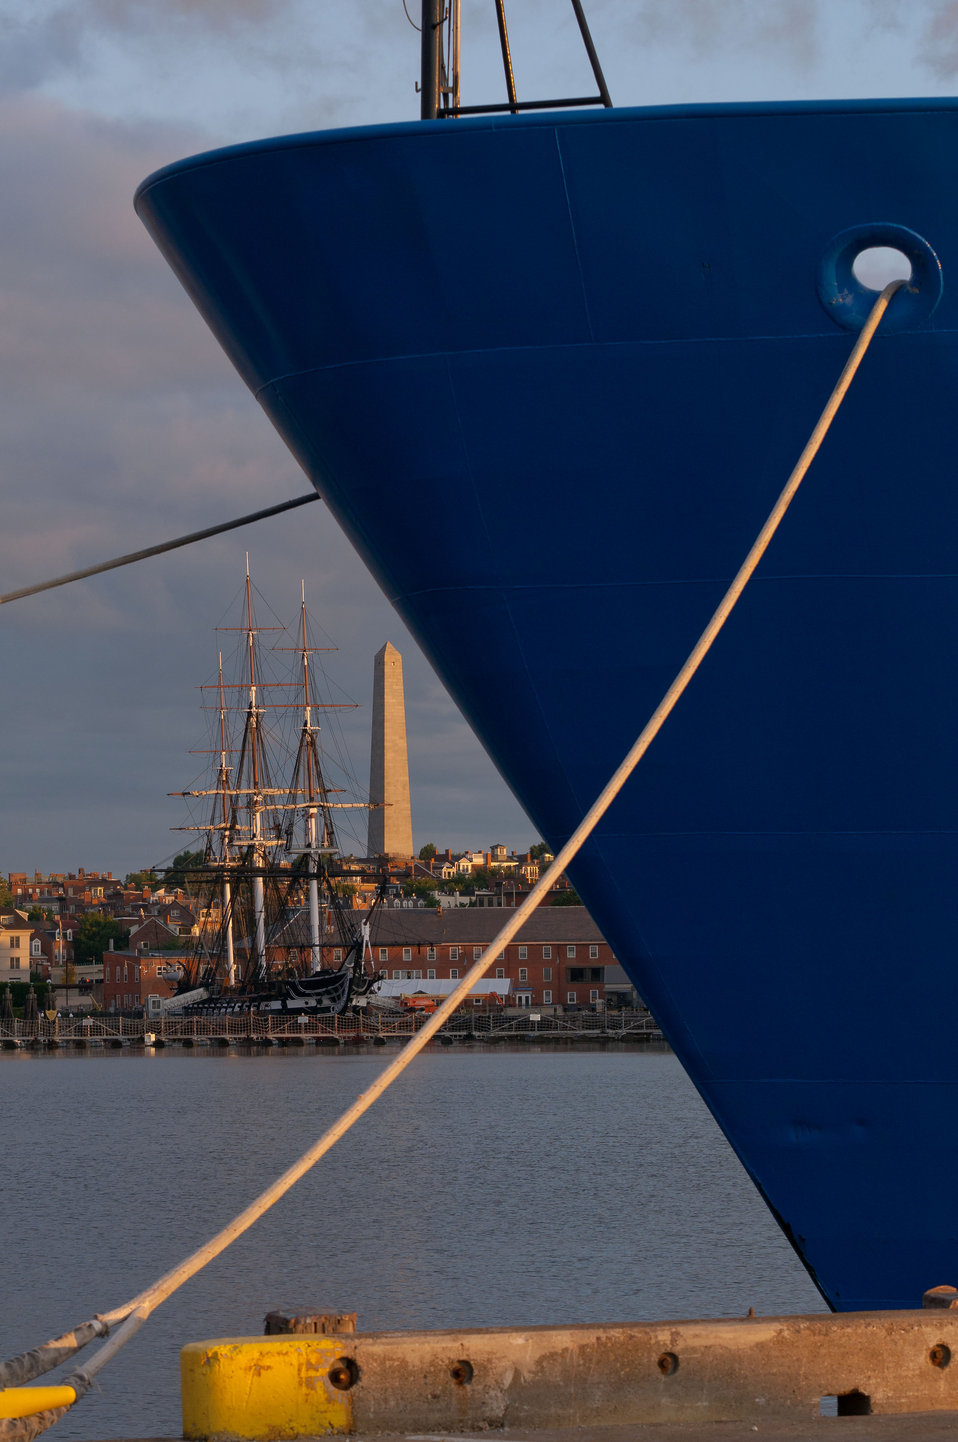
August 4, 2011, looking across Boston Harbor at Old Iron Sides

Learn why we have this ship @ www.epa.gov/boldkids